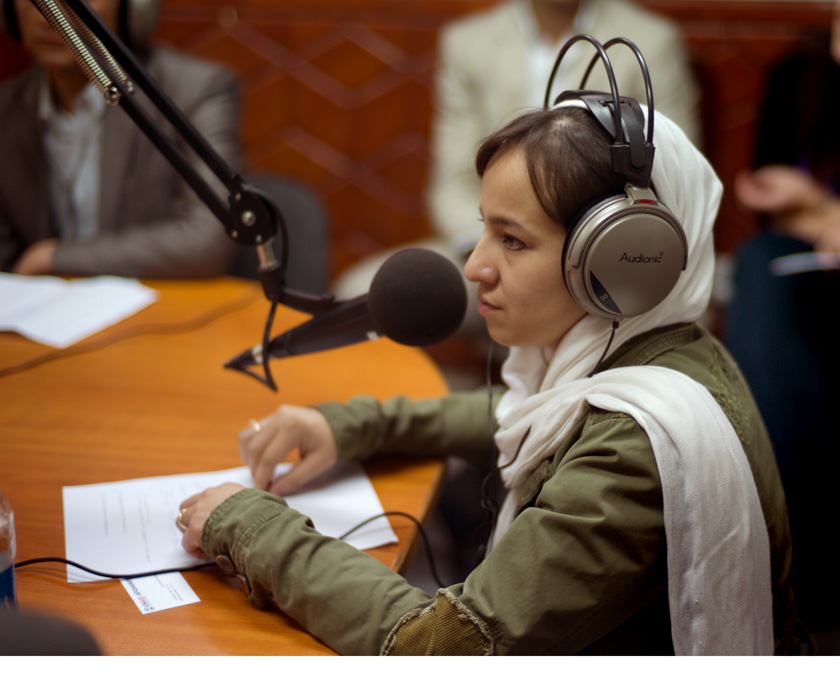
L1002762Refrigerator